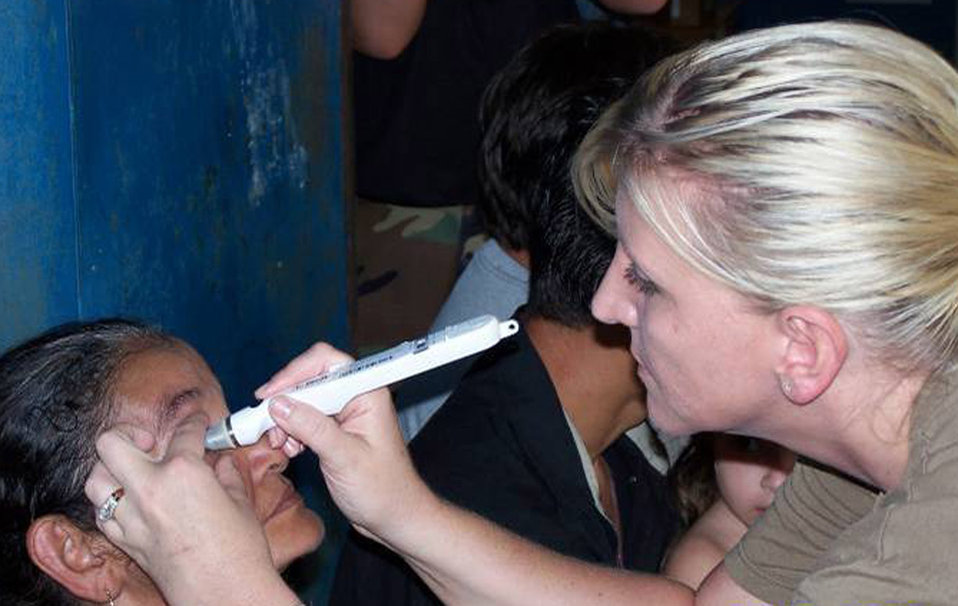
21st MDG Airmen return from humanitarian, training deployment

Tech. Sgt. Kellie Remmert performs a tenometry exam on a patient during a medical readiness exercise, or 'MEDRETE' mission June 23 in Poto Si, El Salvador. Airmen from the 21st Medical Group are supporting the Central American exercise as part of an ongoing U.S. Southern Command initiative.